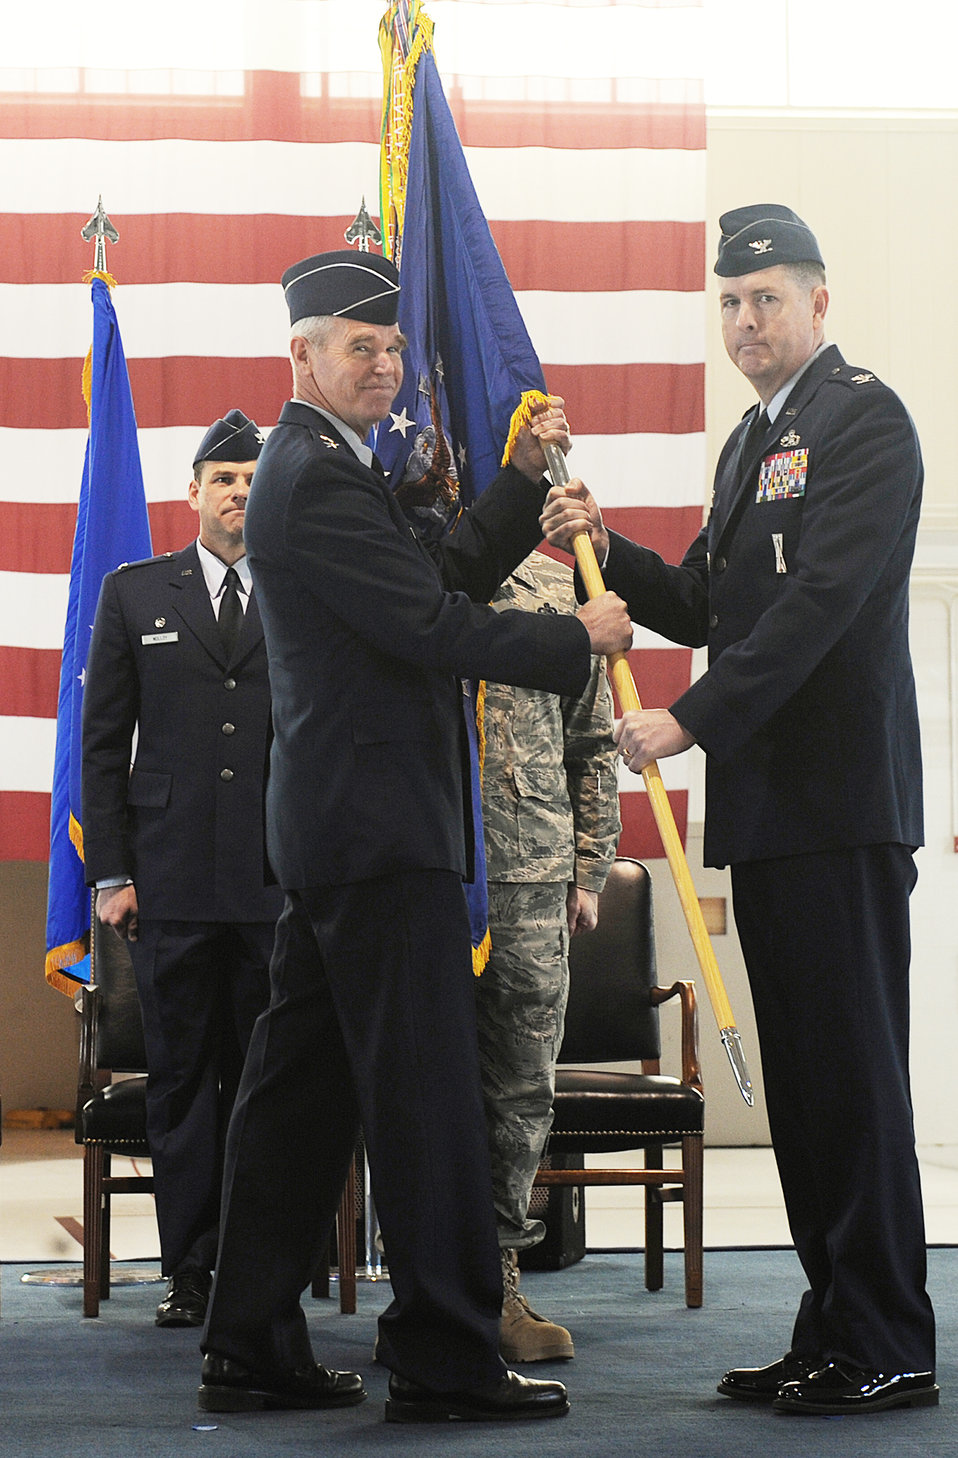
New era begins for Joint Base Langley-Eustis

Maj. Gen. William L. Holland passes a guidon to Col. Donald E. Kirkland during the 633rd ABW activation and change-of-command ceremony Jan. 7, 2010, at Joint Base Langley-Eustis Va. The activation of the 633rd ABW is the first step in fulfilling Congress' 2005 Base Realignment and Closure decision that forms Joint Base Langley-Eustis later this month. General Holland is the 9th Air Force commander and Colonel Kirkland is the 633rd Air Base Wing commander.